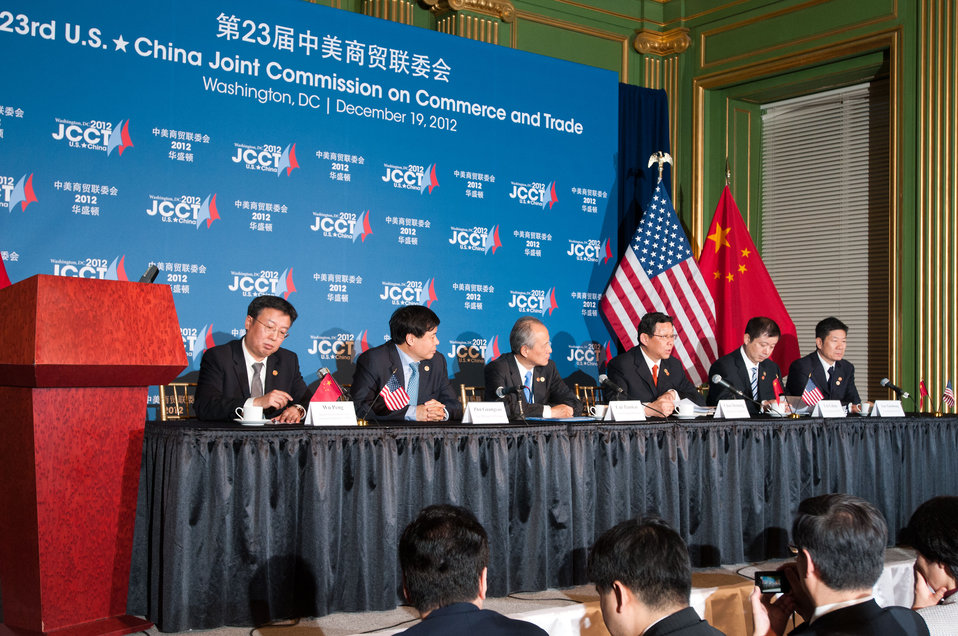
(L to R) China’s Ministry of Foreign Affairs Information Department Deputy Director-General Wu Peng, Vice Minister of Finance Zhu Guangyao, Vice Foreign Minister Cui Tiankai, Minister of Commerce Chen Deming, Vice Minister of Industry and Information Technology (MIIT) Liu Lihua, Vice Minister of National Copyright Administration of China (NCAC) Yan Xiaohong answer questions from international news media journalists at the 23rd Session of the U.S. China Joint Commission on Commerce and Trade (JCCT) press conference, at the Andrew W. Mellon Auditorium in Washington, D.C. on Wednesday, Dec. 19, 2012. The JCCT holds high-level plenary meetings on an annual basis to review progress made by working groups that focus on a wide variety of trade issues. These working groups meet throughout the year to address topics such as intellectual property rights, agriculture, pharmaceuticals and medical devices, information technology, tourism, commercial law, environment, and statistics.